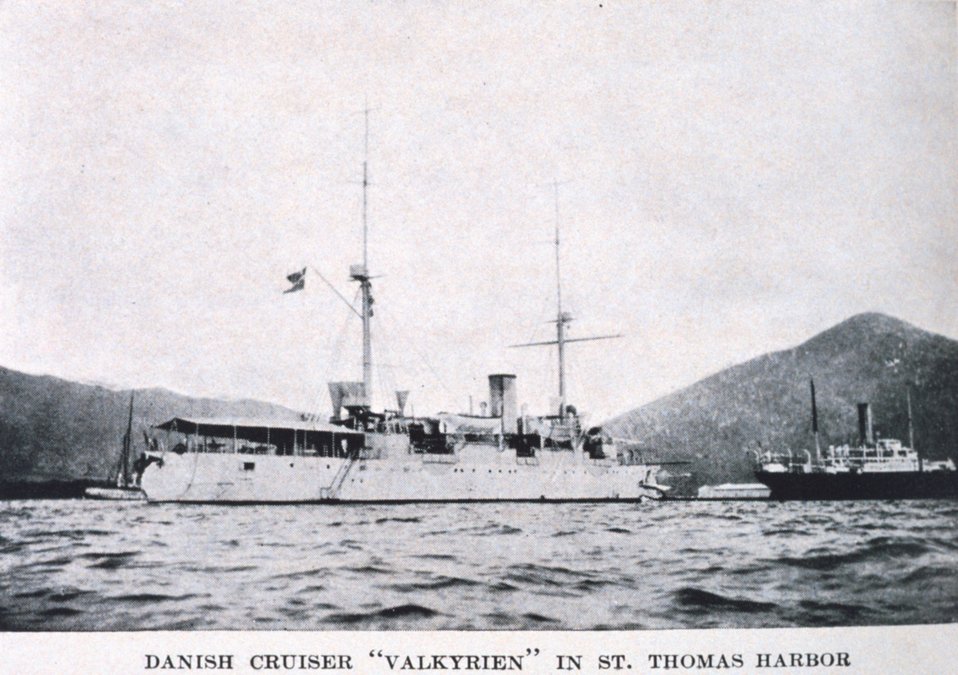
'Danish Cruiser Valkyrien in St. Thomas Harbor'. In: 'The Virgin Islands Our New Possessions and the British Islands', by Theodoor De Booy and John T. Faris, 1918. J. B. Lippincott and Company, Philadelphia. P. 31. Library Call Number C/hc100 V81 B.